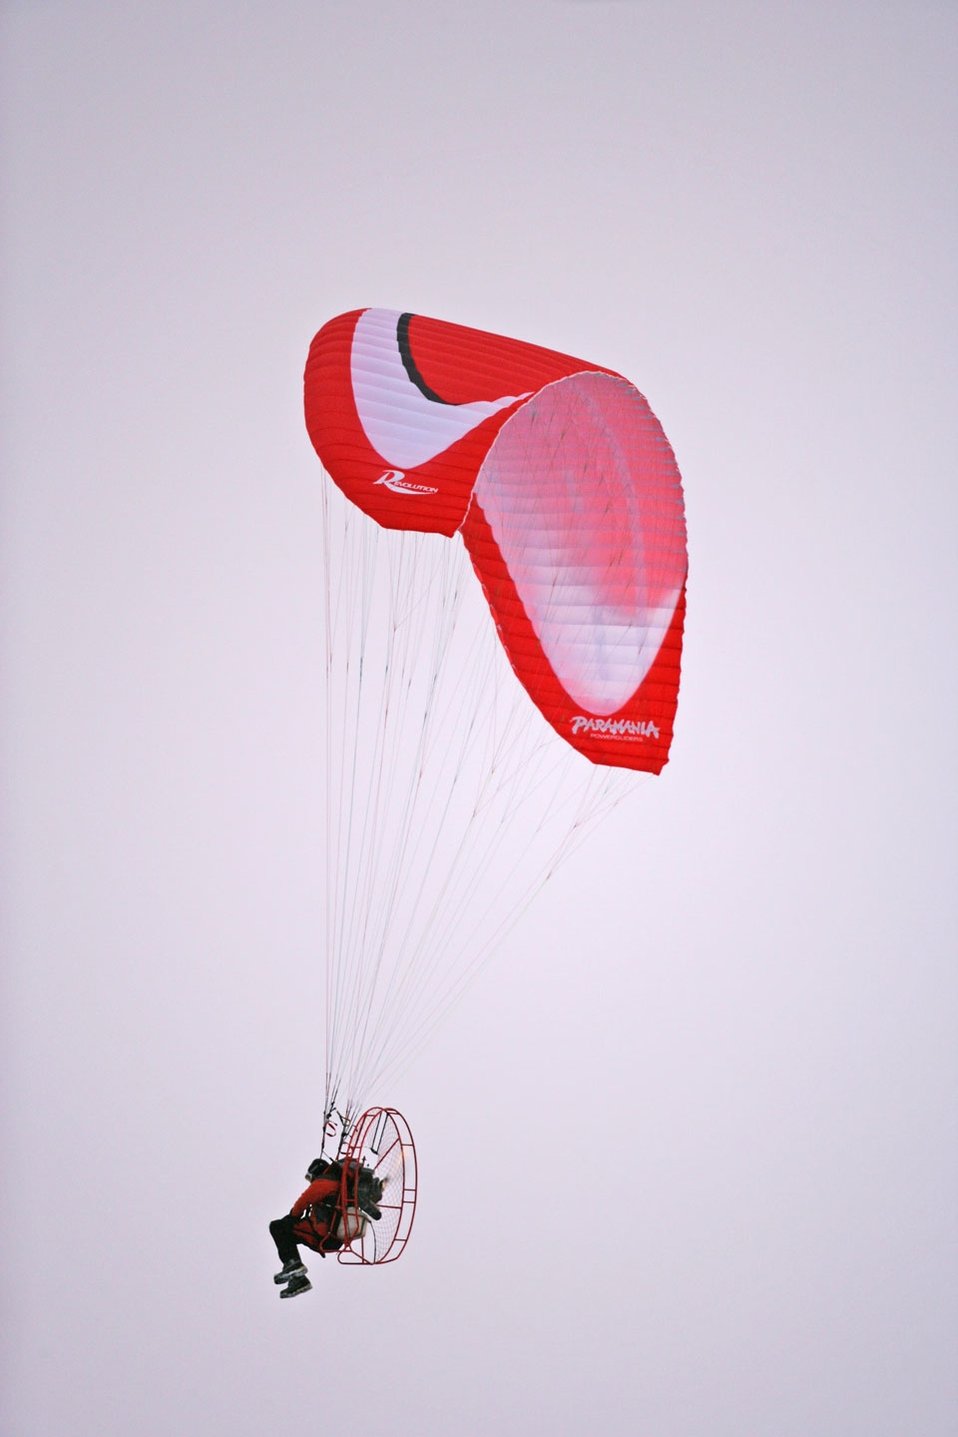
Paragliding to get a better view of ice conditions.